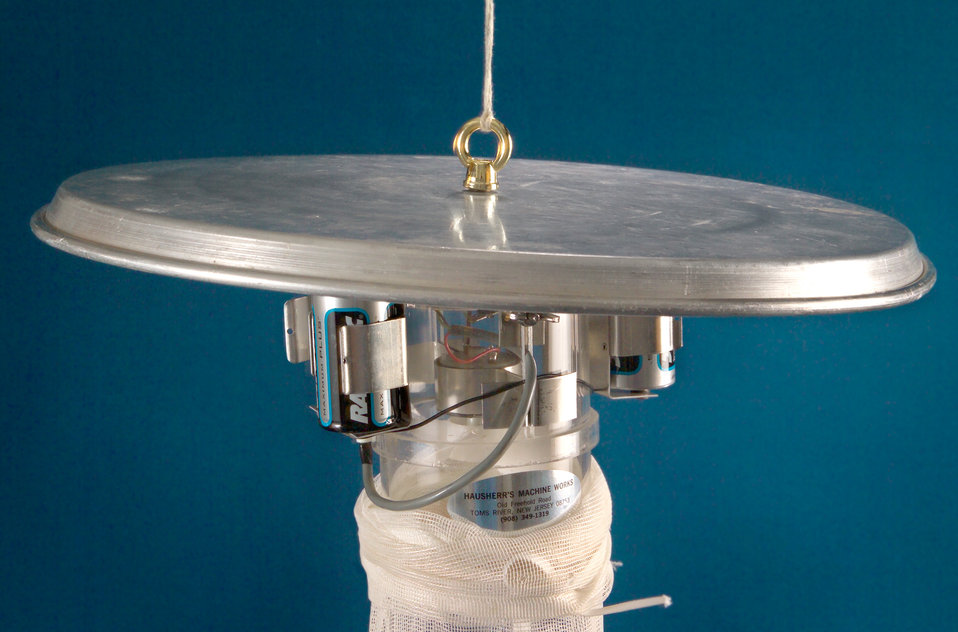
This is a close-up of the top of a mosquito light trap used to trap vectors to be tested for the presence of pathogens.